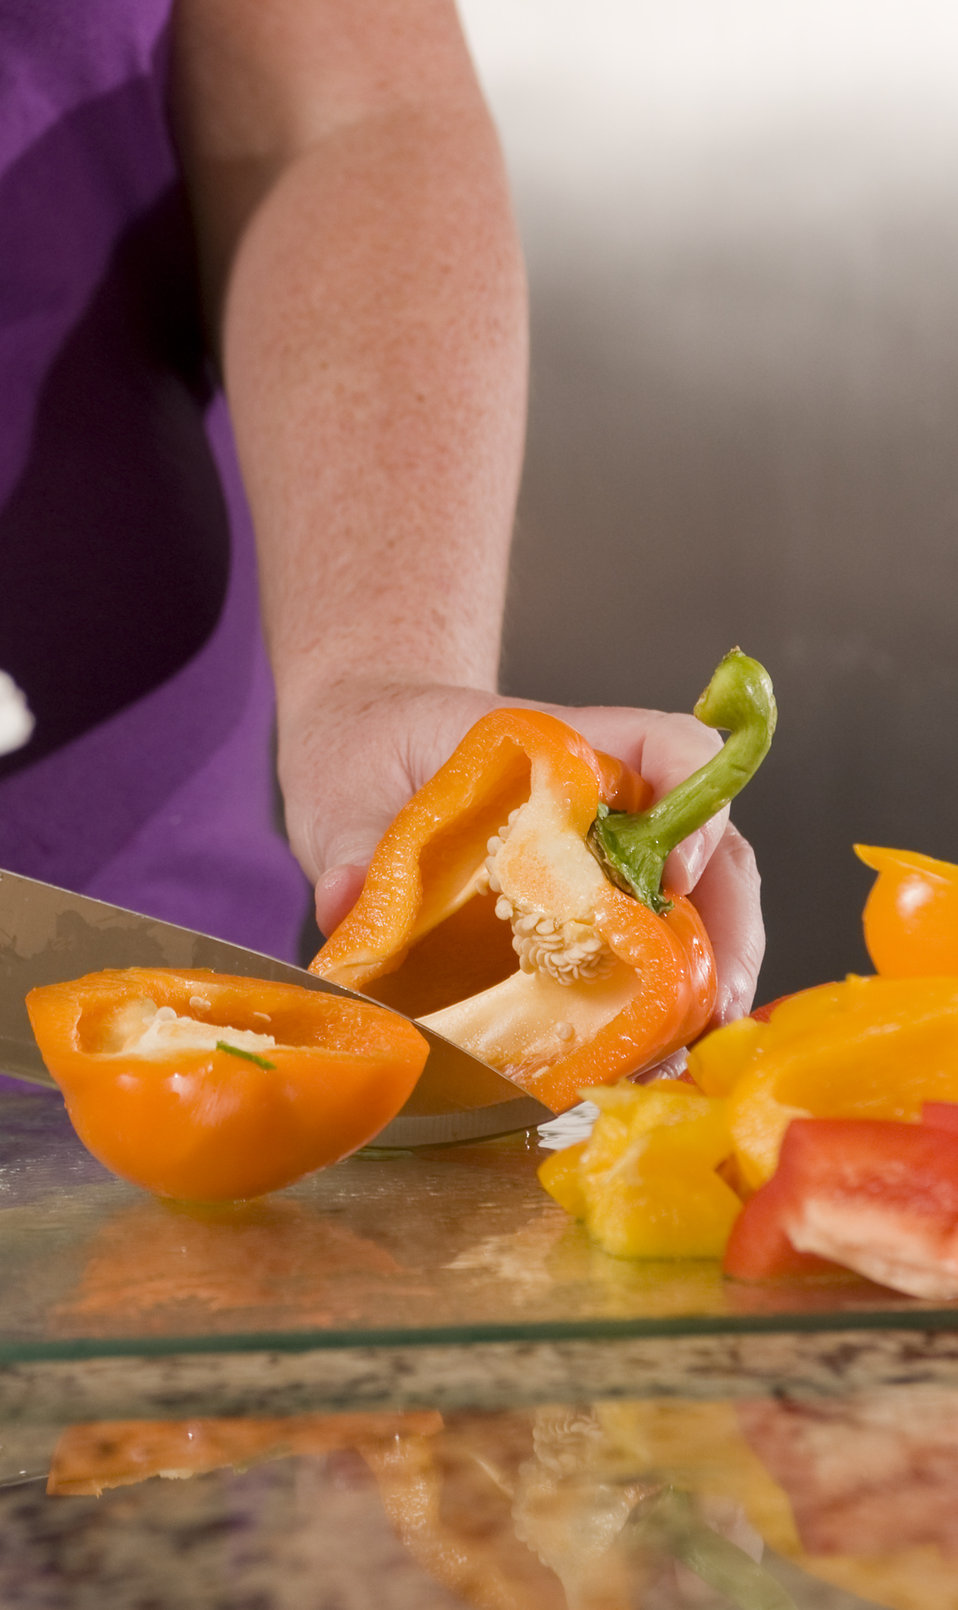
Here we see a woman in a kitchen setting photographed in the process of preparing a number of just-washed bell peppers, atop a clean glass cutting board. This was an orange pepper, while two other peppers, a red and yellow, hand been chopped as well. It is very important to prepare foods in as clean environment as possible, thereby, minimizing the possibility of introducing foodborne contaminants into the food preparation process.